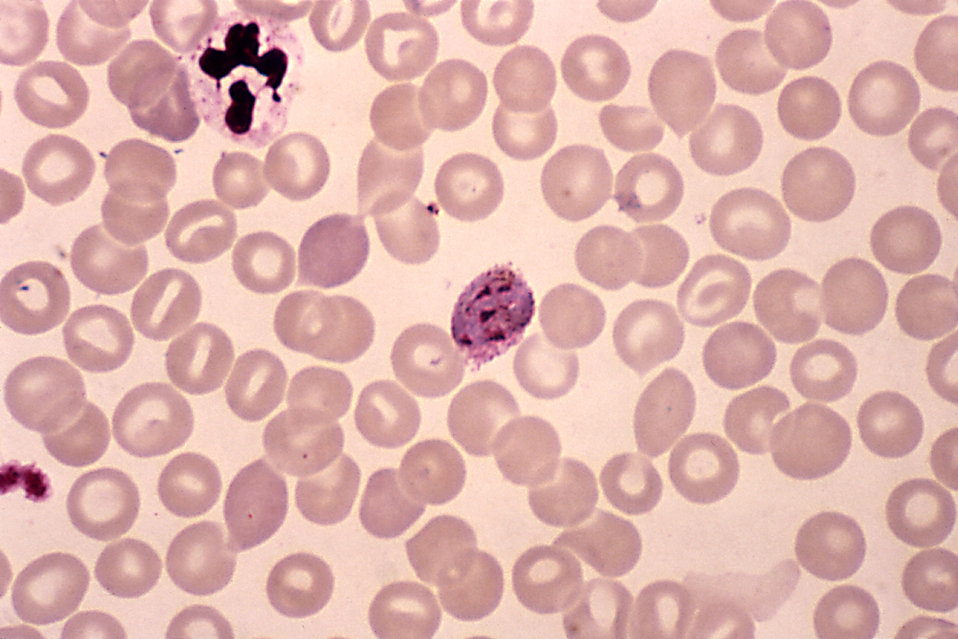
This thin film micrograph depicts an immature P. vivax schizont with 5 chromatin masses, using Giemsa stain; Mag. 1000X.